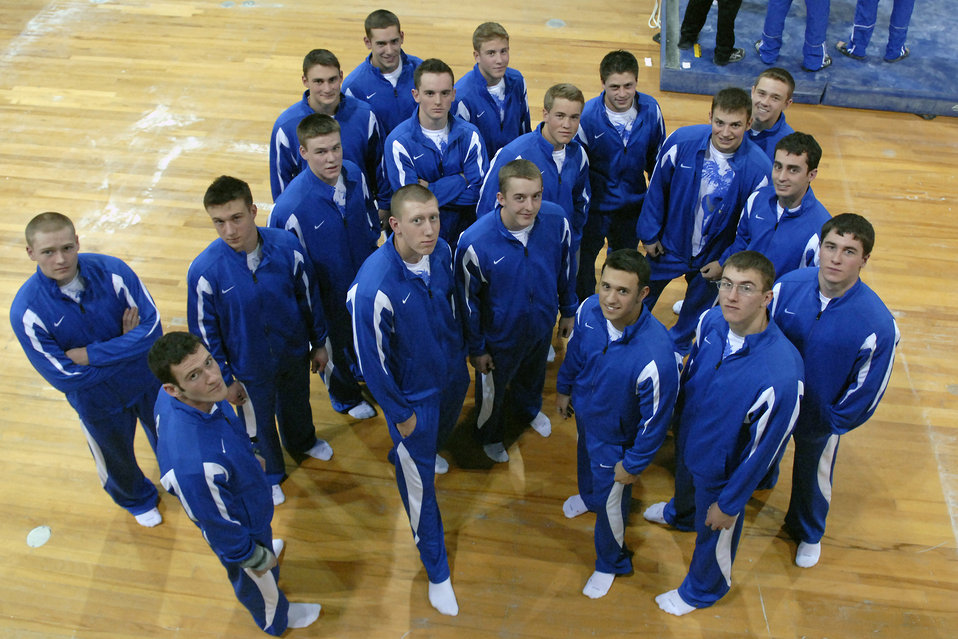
Airpower

The U.S. Air Force Academy men's gymnastics team prepares to enter the arena as they hosted the annual Rocky Mountain Open Jan. 10 at the Academy in Colorado. The Falcons accounted for seven top-10 finishes as they placed third overall in the meet in front of a capacity crowd.